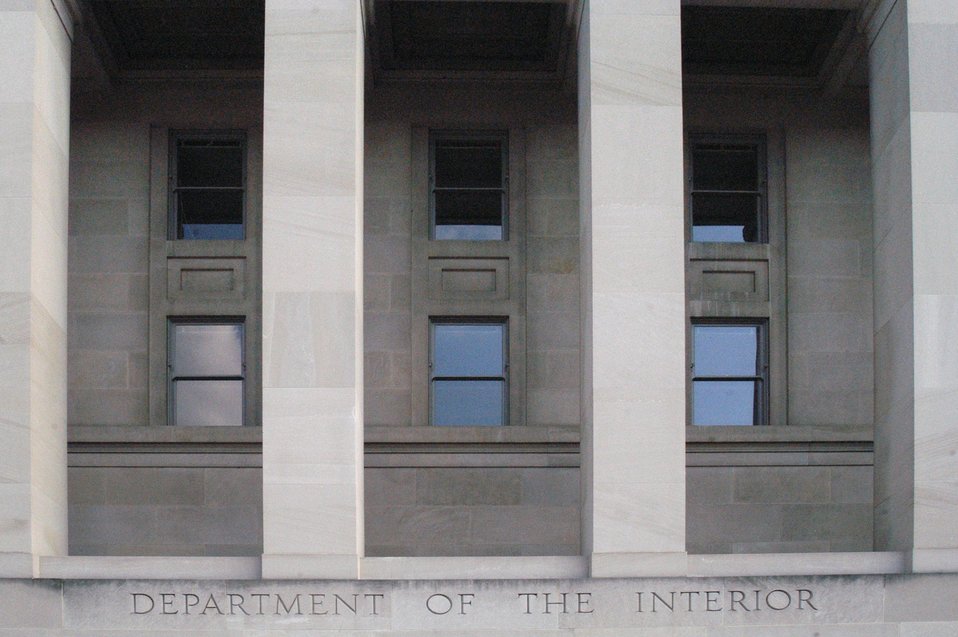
Department of the Interior building in Washington DC on 1849 C Street N.W. Photo by Tom Iraci, July 2004.